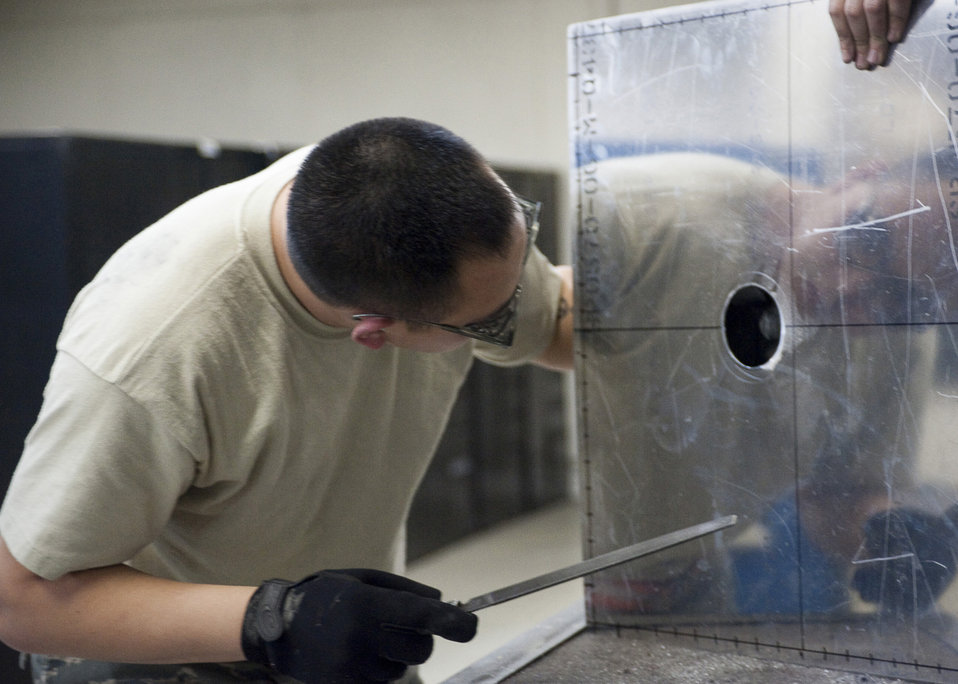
374th MXS aids Tomadachi

Senior Airman Thompson Kongmany examines his work March 28, 2011, at Yokota Air Base, Japan. Yokota AB maintainers built a mount that will be used to help gather data at the Fukushima nuclear plant. In support of disaster relief efforts, Yokota's aircraft structural maintenance Airmen have used their design and fabrication skills. Kongmany is a 374th Maintenance Squadron metals technician.